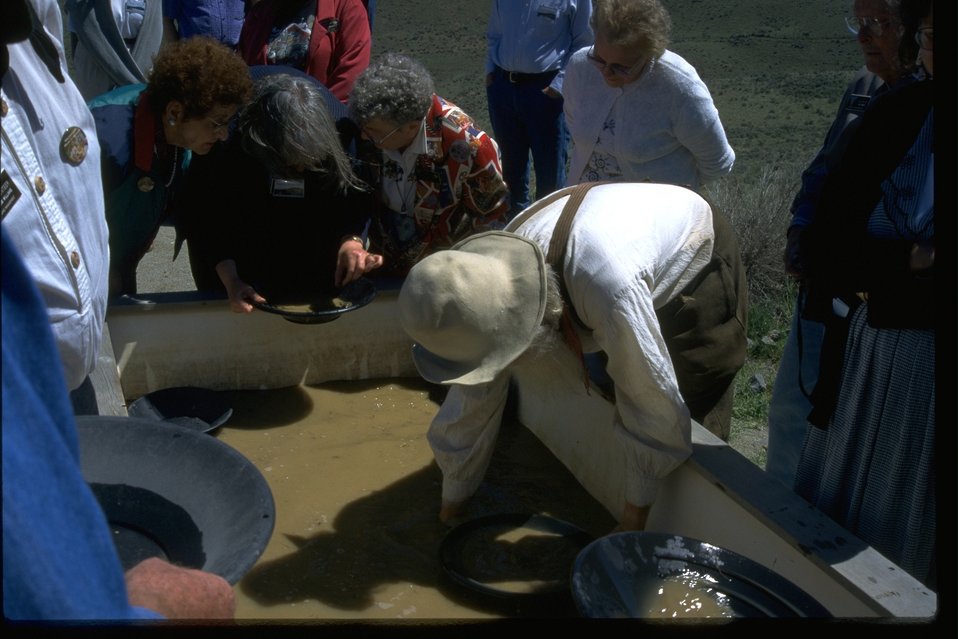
Demonstration of panning (mining method) at the NHOTIC.